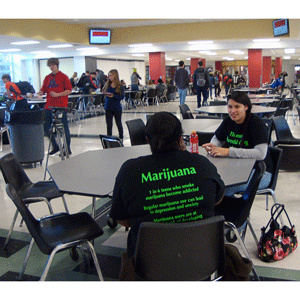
NDFW 2014: Kansas Coverage

Go KFP! Kansas Family Partnership sent a Lawrence High School press release and pitch email about National Drug Facts Week Events to its Lawrence media contacts on Lawrence High School’s activities, the national campaign and KFP’s social media campaign, which resulted in coverage from 6 News Lawrence, KS.